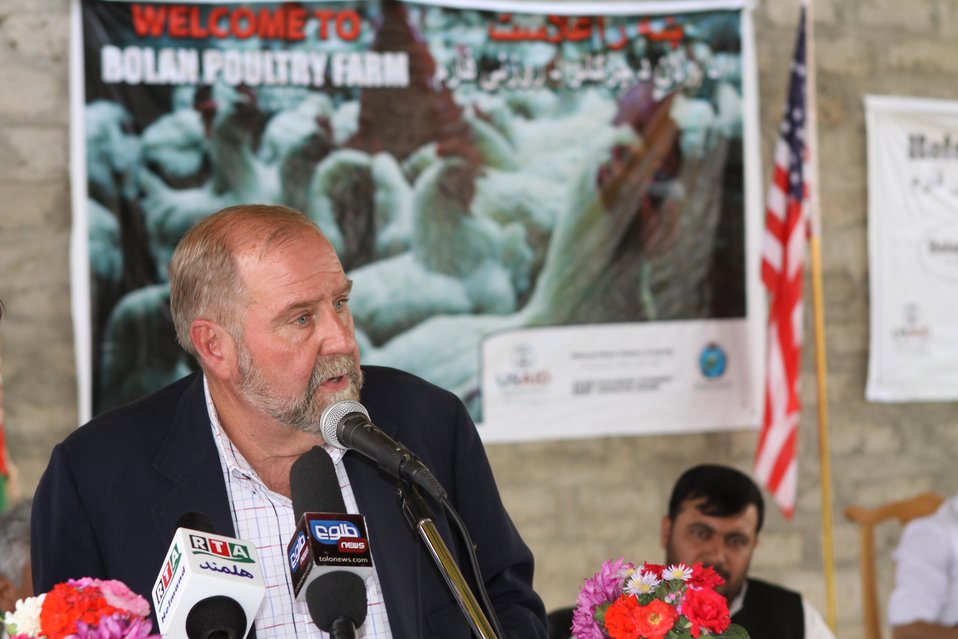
Bolan Poultry Farm